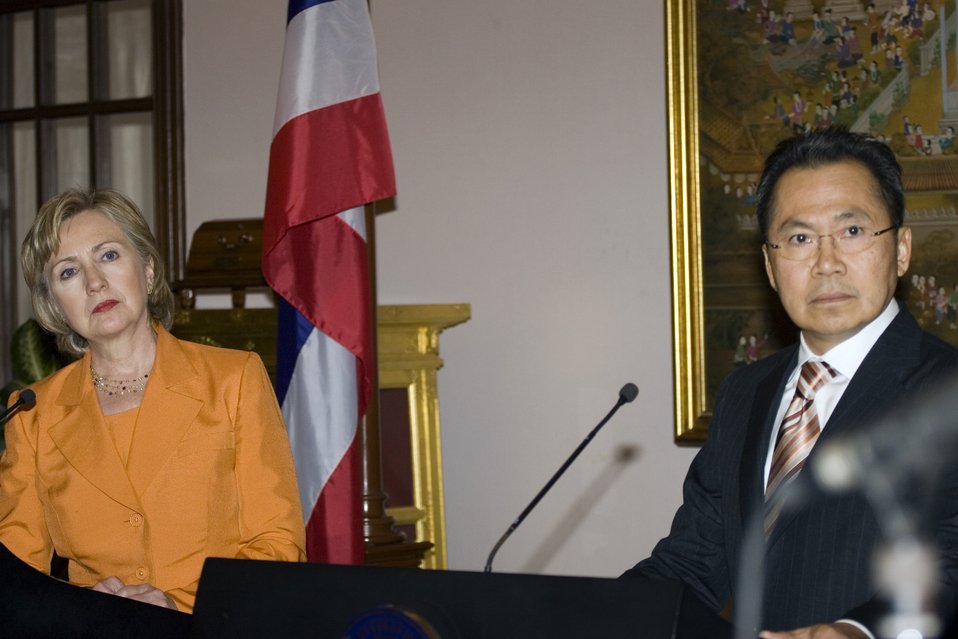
U.S.-Thailand Bilateral Meeting

U.S. Secretary of State Hillary Rodham Clinton and Deputy Prime Minister Korbsak Sabhavasu answer questions from the press following the bilateral meeting at Government House in Bangkok, Thailand July 21, 2009.